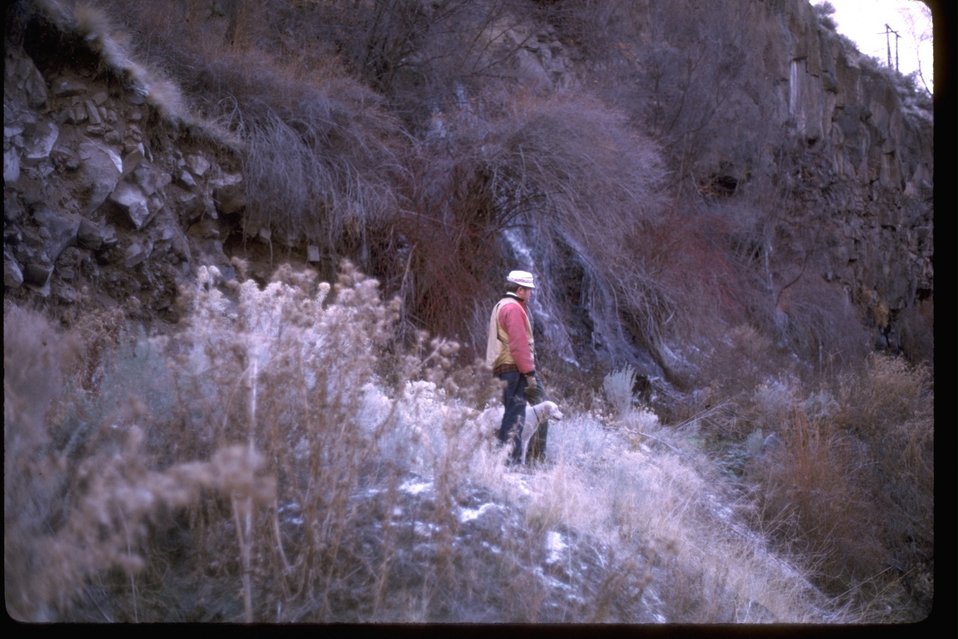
Hunter with his dog along the Crooked River.